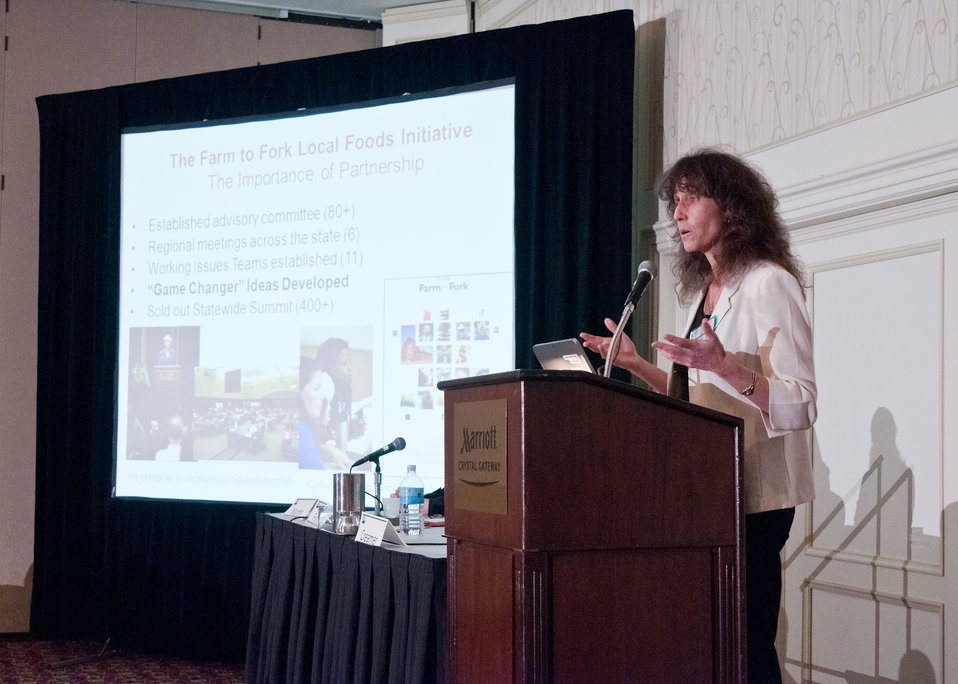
Nancy Creamer, Director, Center for Environmental Farming Systems, North Carolina State University, Raleigh, North Carolina discussed “A Comprehensive Approach to Building North Carolina’s Regional Food Economy” at the “Promoting Sustainable Agriculture Through Regional Food Sheds” during the at the World Agricultural Outlook Board Forum in Crystal City, VA, on Thursday, February 24, 2011. The theme of this year’s Agricultural Outlook Forum is, “Today’s Strategies and Tomorrow’s Opportunities.”